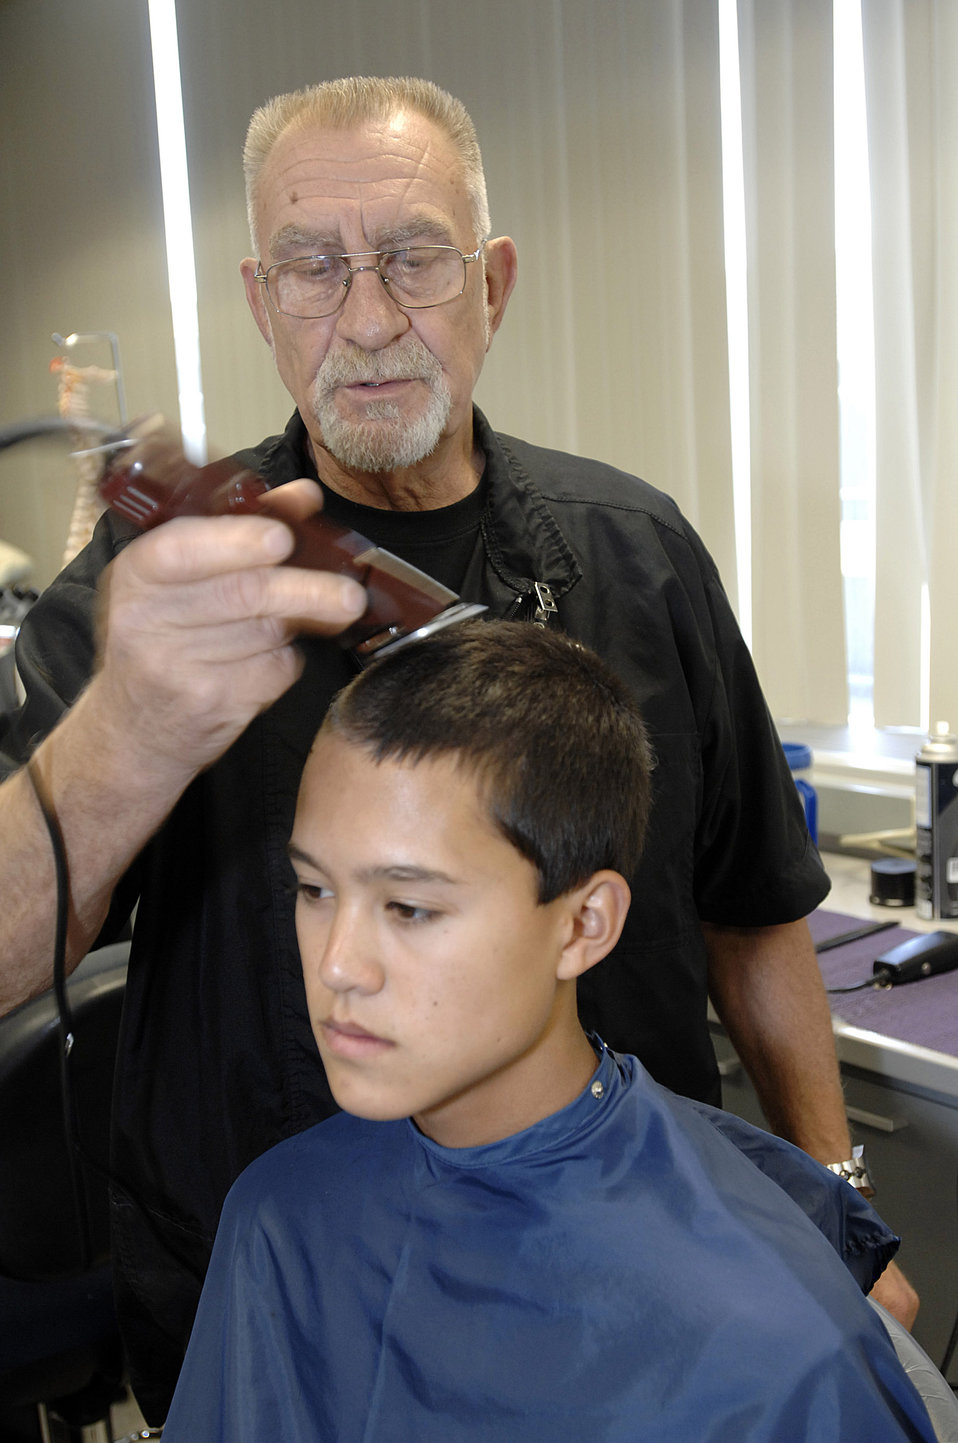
Class of 2012 Arrives

Basic Cadet Tate Montgomery receives his haircut from Gerd Siedler during inprocessing June 26 at the U.S. Air Force Academy, Colo. The 1,369 members of the Class of 2012 arrived to begin Basic Cadet Training. Mr. Siedler has cut basic trainees hair for 20 consecutive years.